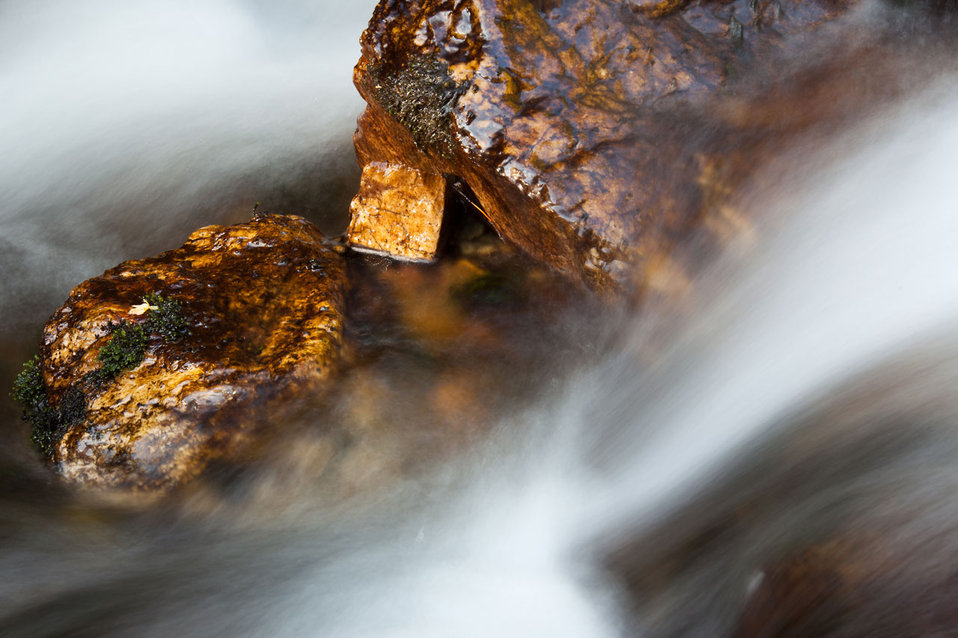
Wet rock in river

Wet rock in blurred water motion.